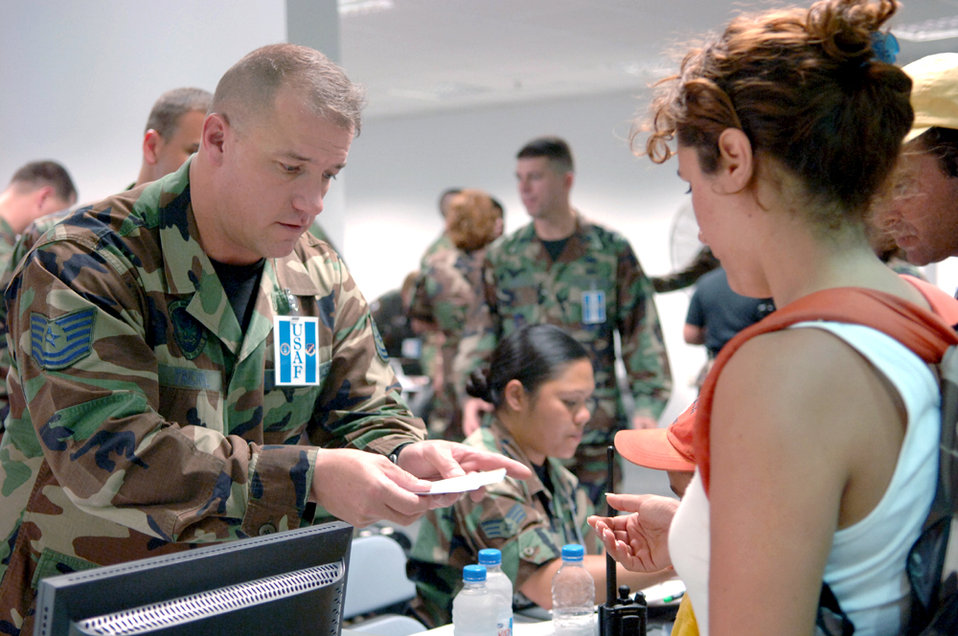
Departure efforts through Incirlik continue

Tech. Sgt. Dave Trichel hands an American citizen who departed Lebanon the key to her temporary living quarters at Incirlik Air Base, Turkey, on July 24. Sergeant Trichel is assigned to the 39th Services Squadron.